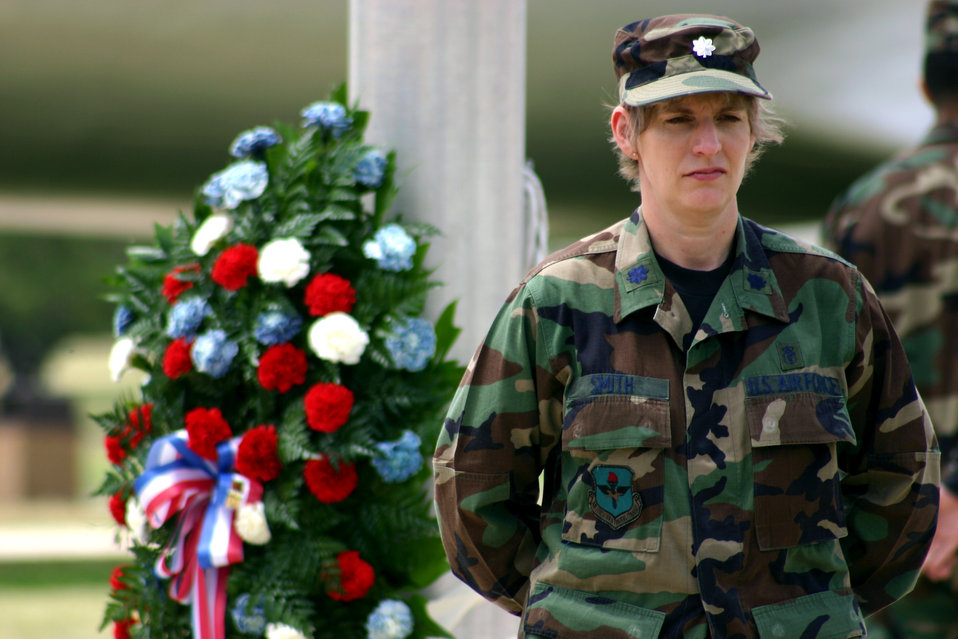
Silent vigil

Lt. Col. Jeanne Smith stands at parade rest in silent vigil along with other members of the 59th Medical Wing's physical medicine flight at Lackland Air Force Base, Texas, on Friday, May 26, 2006. The vigil, part of the base's Memorial Day observances, honored the contributions of servicemembers who are, or were, missing in action or prisoners of war. Each shift stood vigil for 10 minutes during the eight-and-a-half-hour observance.